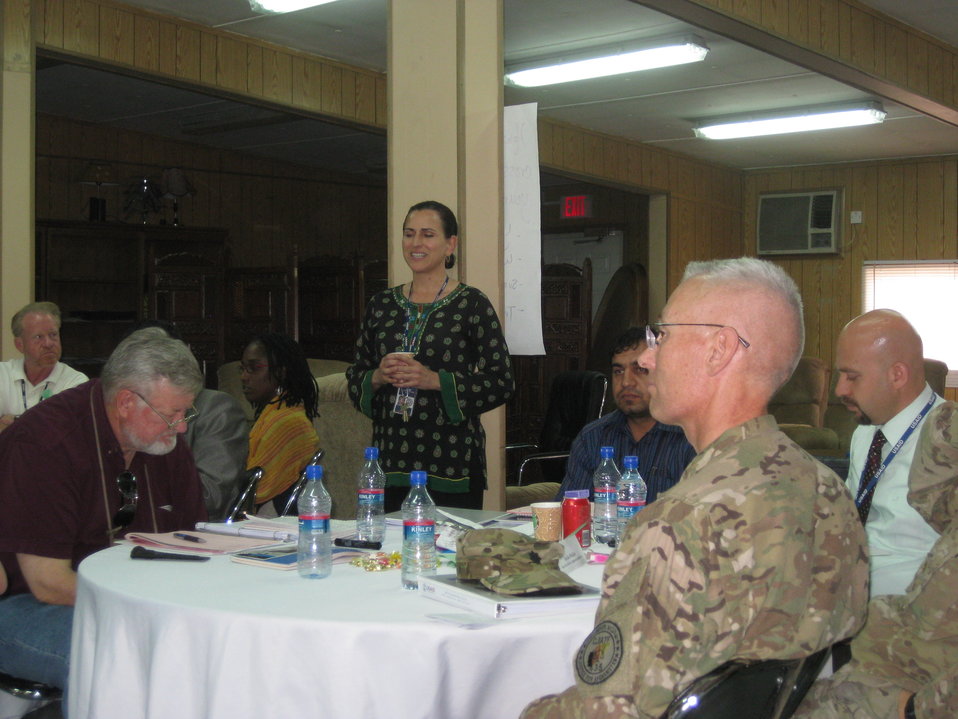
Afghan Youth Voices 049